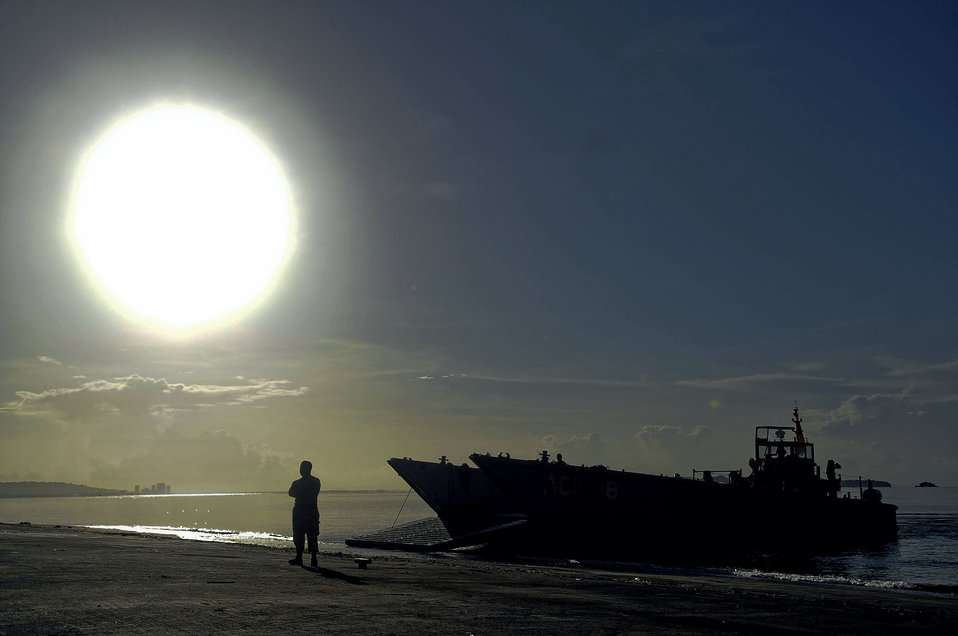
American servicemembers continue to provide promise

A Navy Sailor waits to transport a team of medics to the USS Kearsarge on a landing craft mechanized amphibious unit in support of Operation Continuing Promise 2008 Nov. 4 in Trinidad and Tobago.